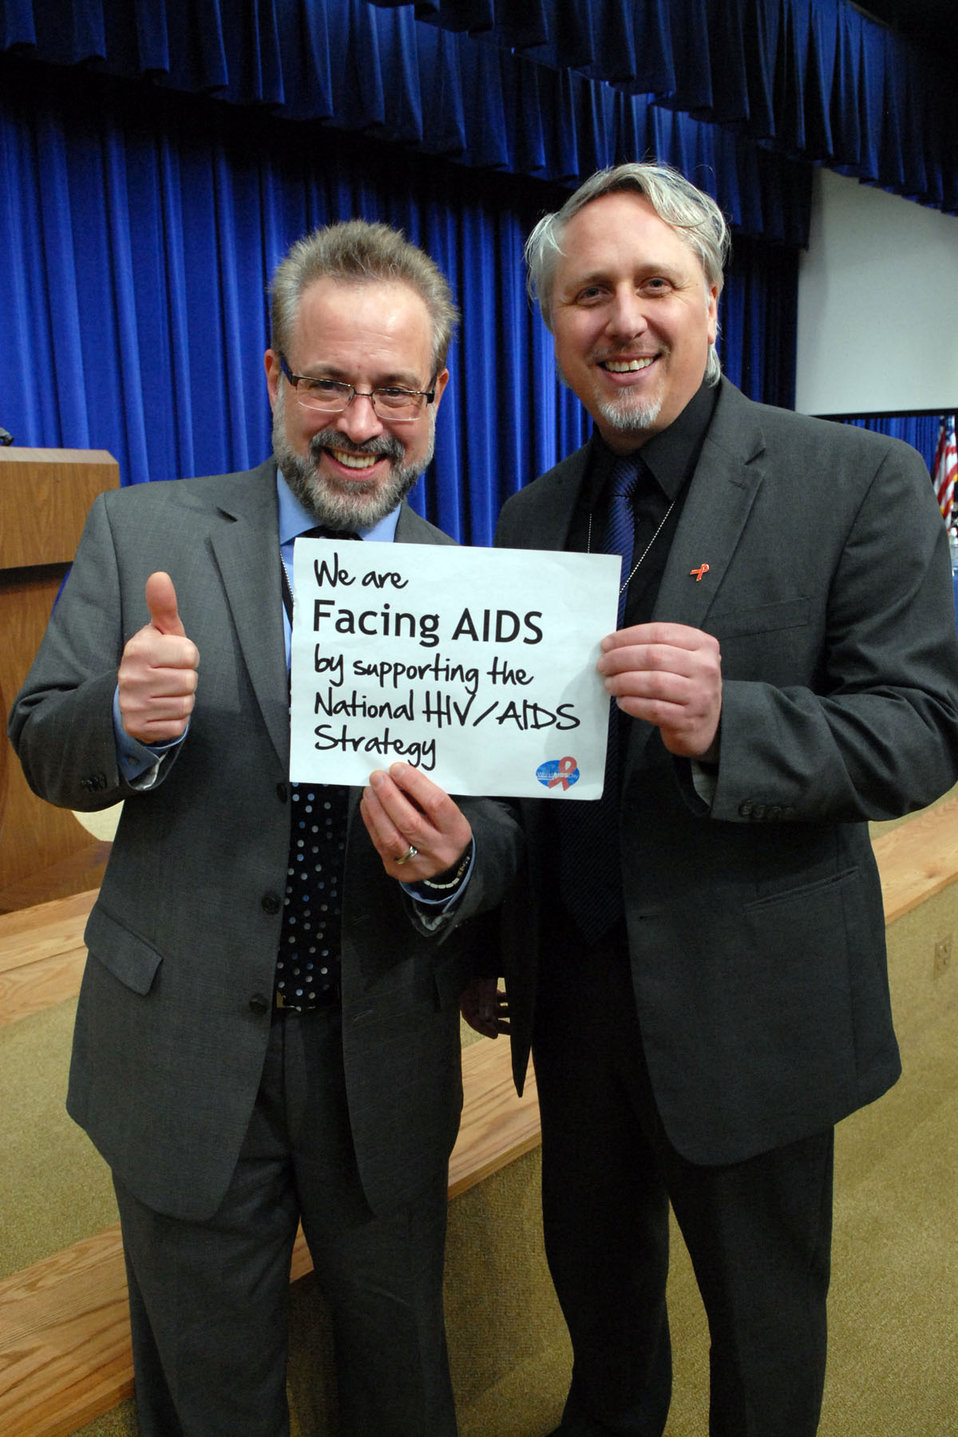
We are Facing AIDS by supporting the National HIV/AIDS Strategy